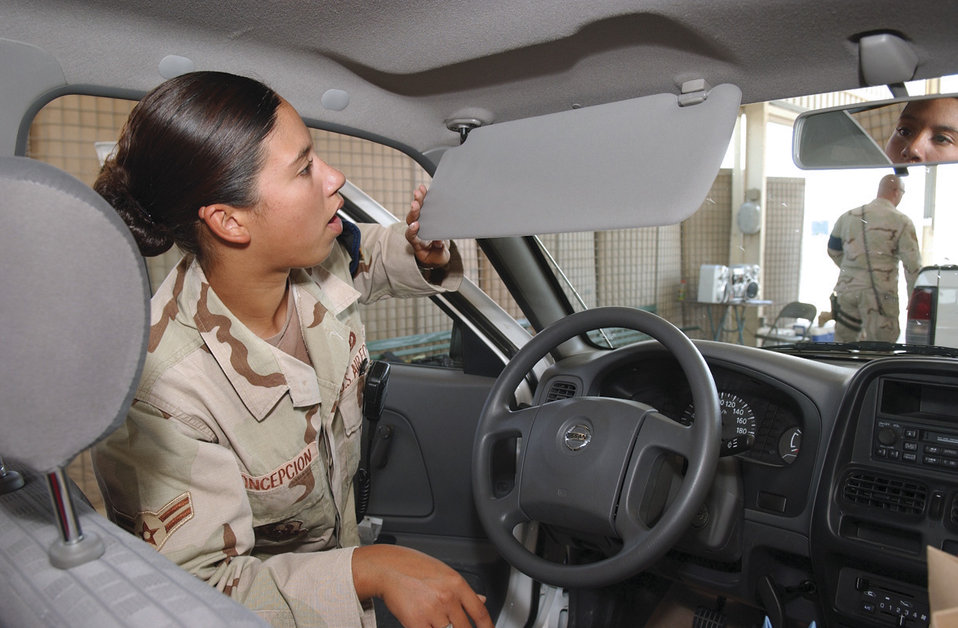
Young Airmen protect base, people

SOUTHWEST ASIA -- Airman 1st Class Amanda Concepcio searches a vehicle at a forward-deployed location. She is assigned to the 379th Expeditionary Security Forces Squadron and is deployed from Tinker Air Force Base, Okla.